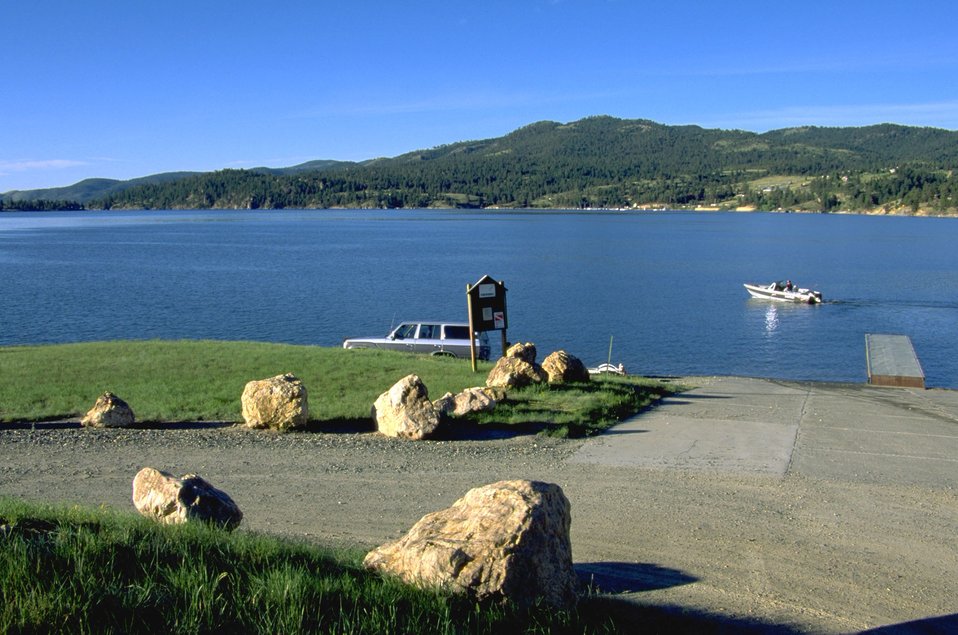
Canyon Ferry Lake with boat ramp